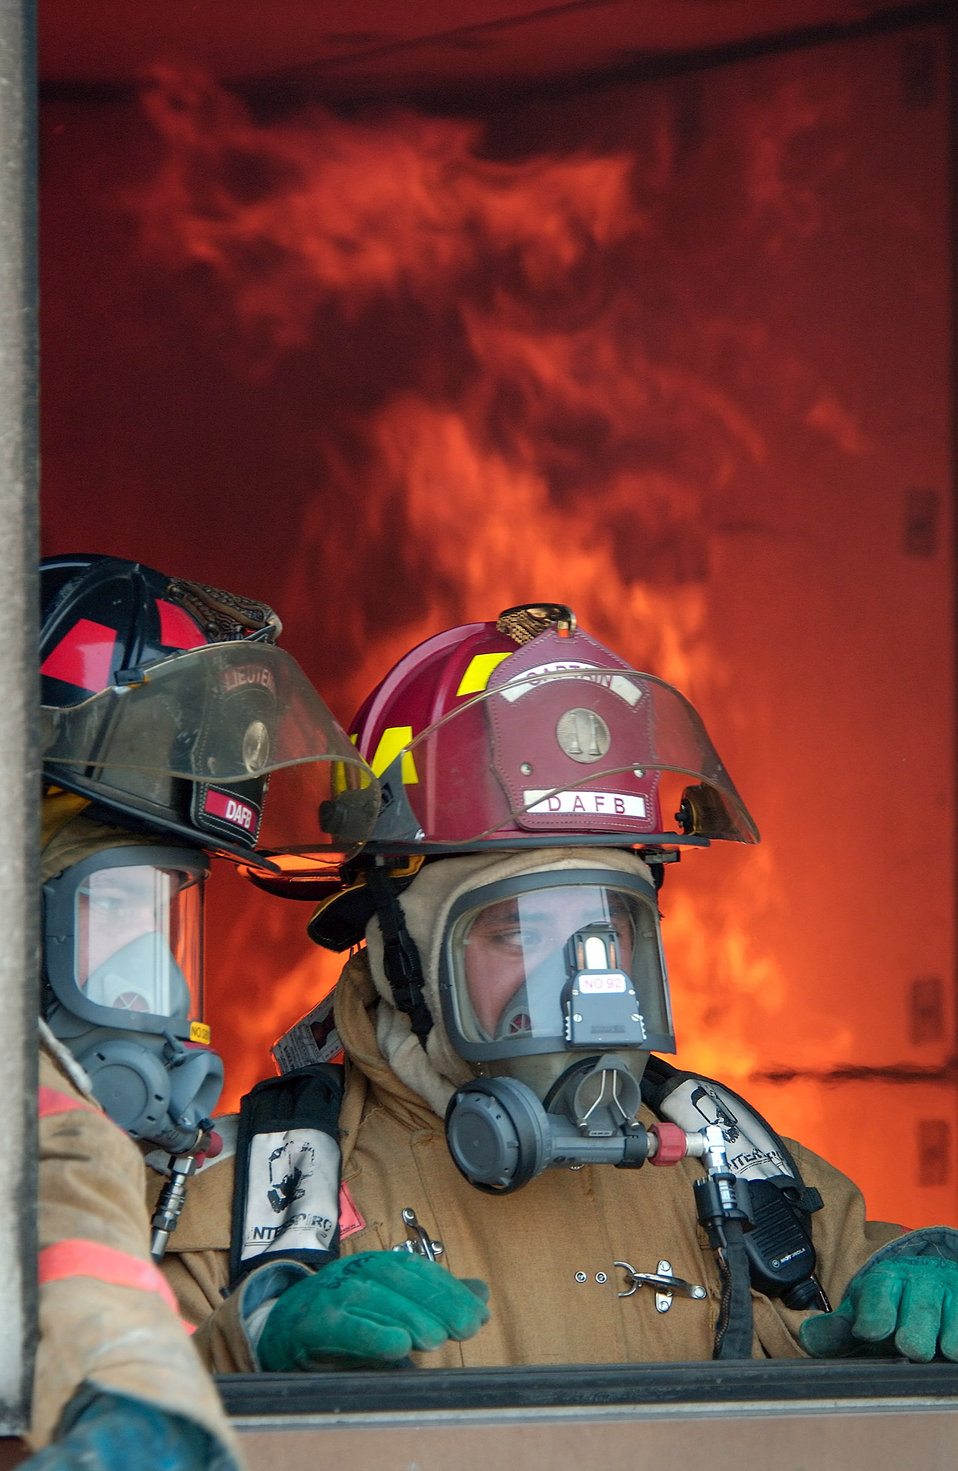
Structural burn

DOVER AIR FORCE BASE, Del. -- Fire fighters receive instruction during a controlled structural burn here recently.